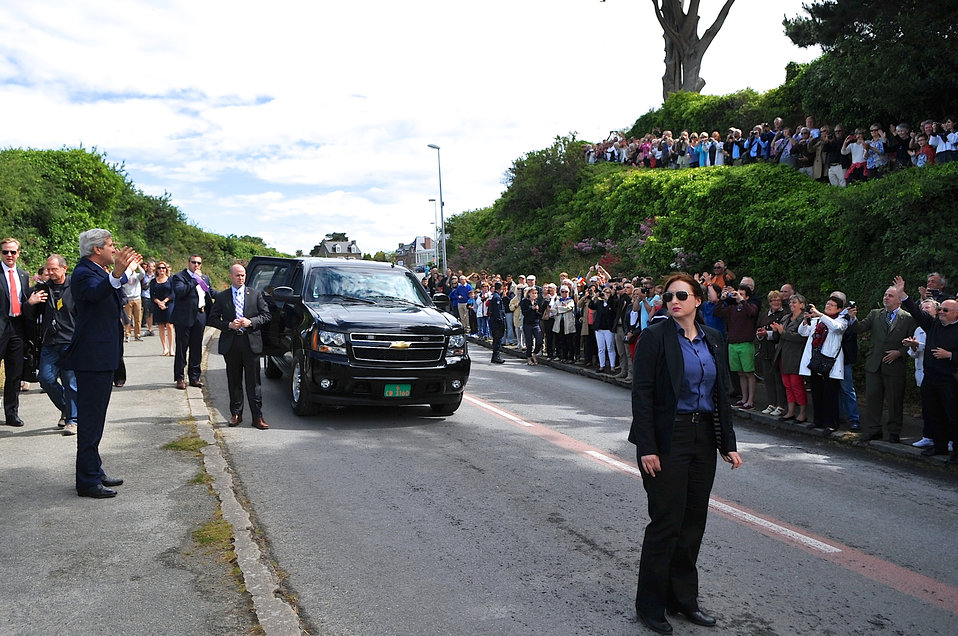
Secretary Kerry Greets Residents of Brittany Town Before Ceremony Saluting American Victims in WWII

U.S. Secretary of State John Kerry greets residents of Saint Briac, France, on June 7, 2014, as he arrives to lay a wreath at a memorial recalling three Americans who died liberating their community. The wreath-laying ceremony coincides with the commemoration of the 70th anniversary of D-Day.